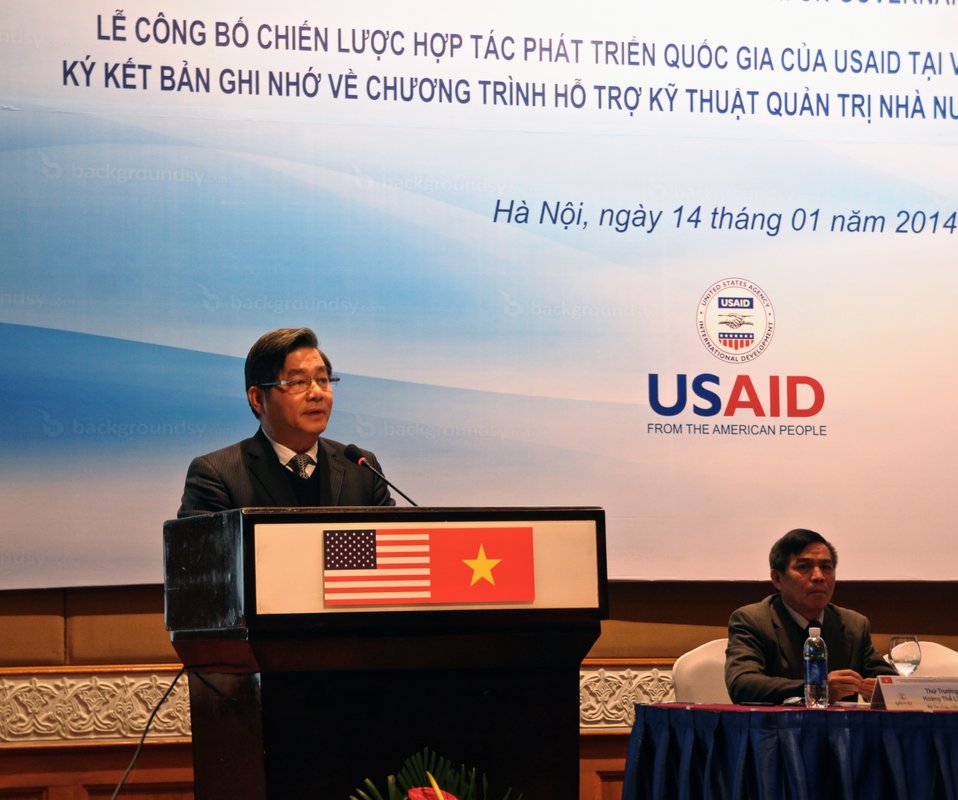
Vietnam's Minister of Planning and Investment Bui Quang Vinh speaks at the event.